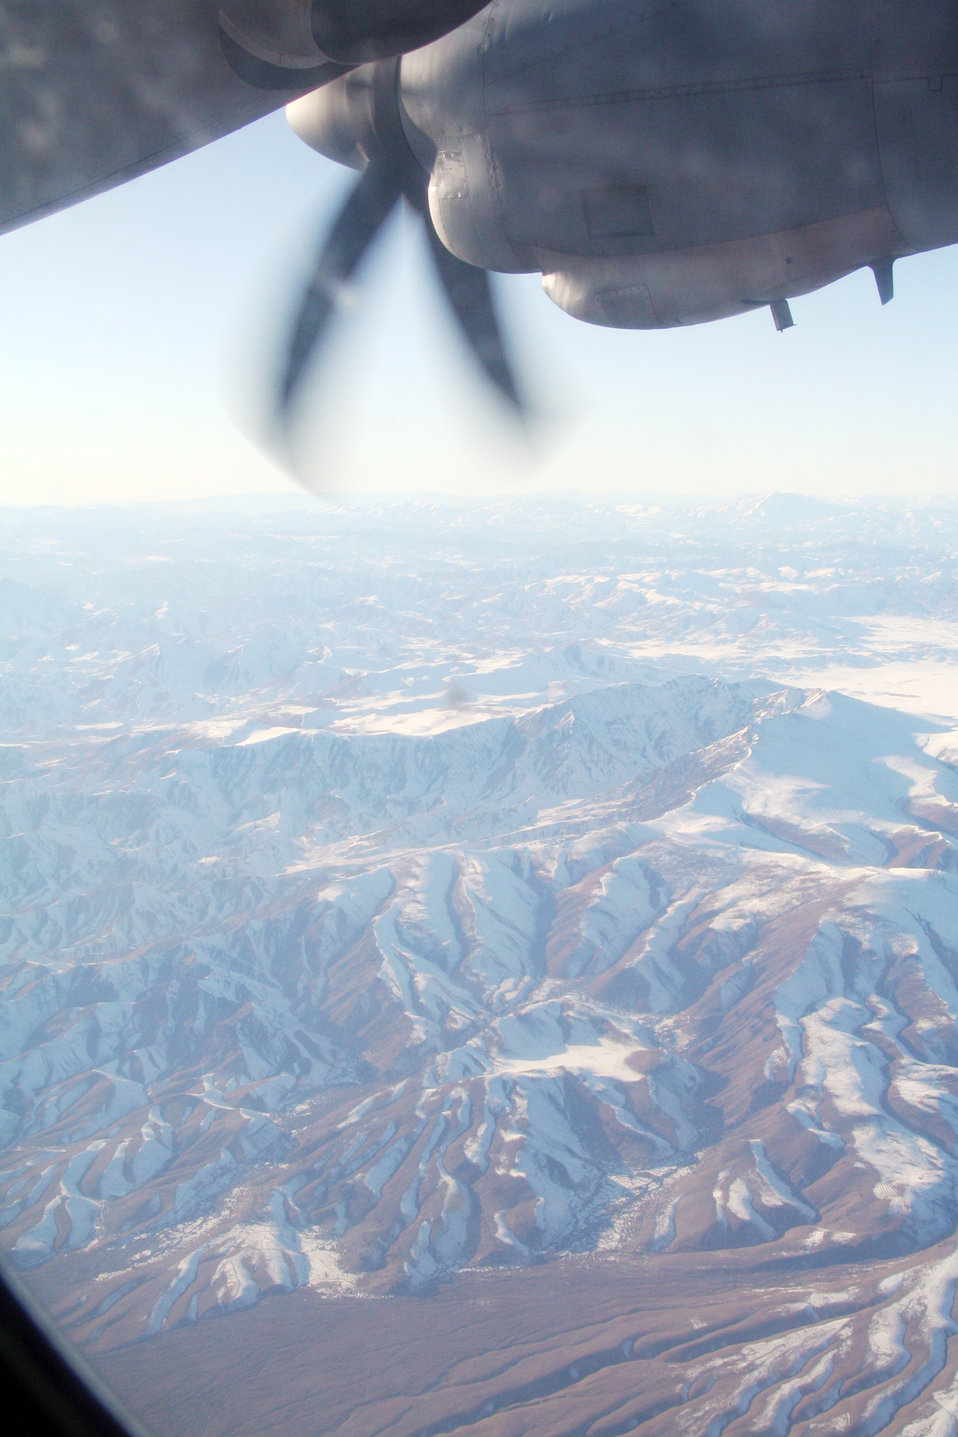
Up in the air

A C-130J Hercules flies over the mountainous terrain of Afghanistan on a mission for Operation Enduring Freedom Dec. 25, 2009.